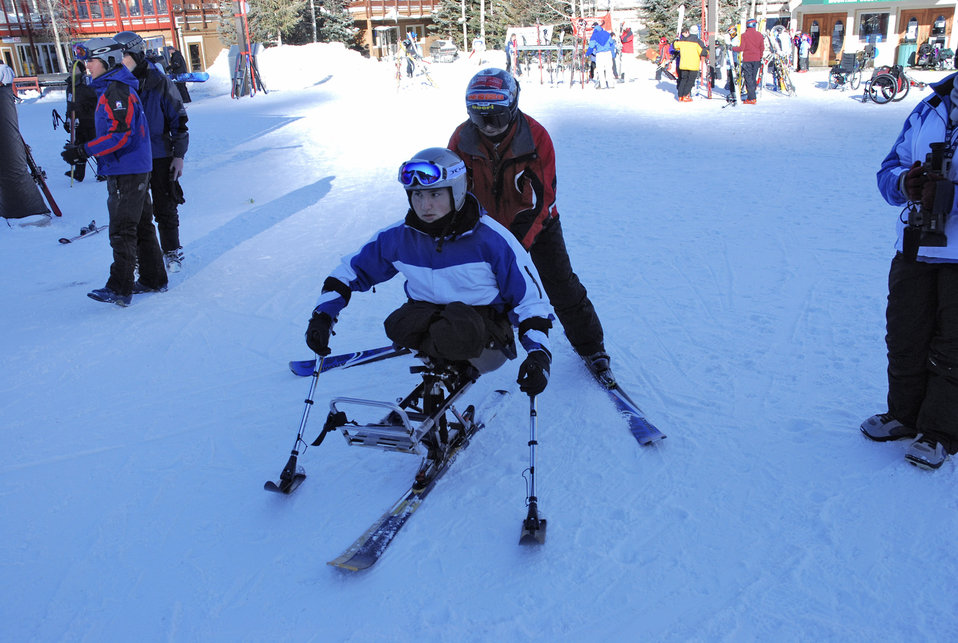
Injured Airman overcomes disabilities on slopes

Airman 1st Class Kevin Krogh gets guided to the gondola for a ride up the mountain in Keystone, Colo., Jan. 26. Airman Krogh was one of several disabled servicemembers who took advantage of free ski lessons offered during the annual SnoFest military community event. Airman Krogh, who was injured during an automobile accident, is an F-22 Raptor weapons loaders assigned to Langley AFB, Va.